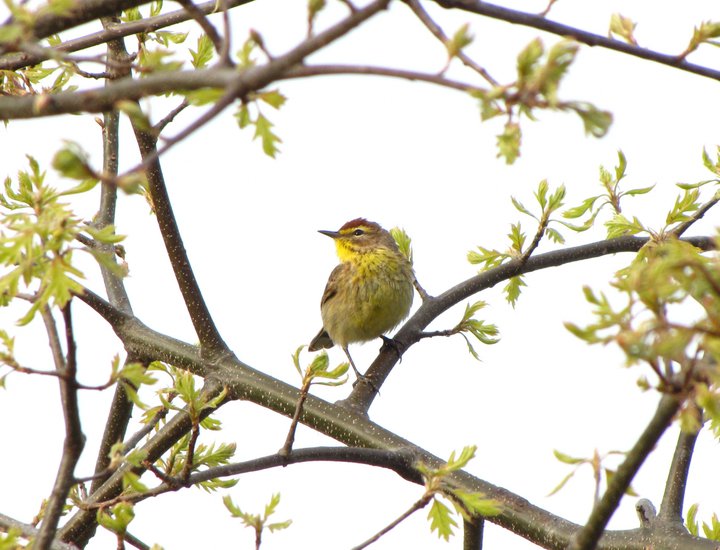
palm warbler

Port Louisa National Wildlife Refuge